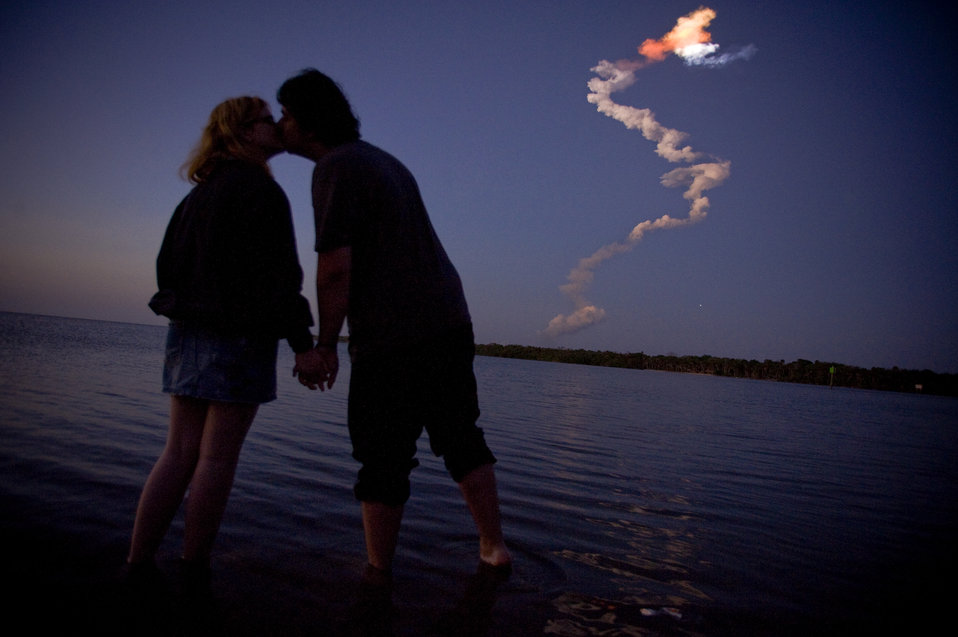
A good luck kiss

Caitlin Dullaghan and Joe Hennessy share a kiss in the Indian River as the space shuttle orbiter Discovery disappears from the horizon March 16 at Cape Canaveral, Fla.